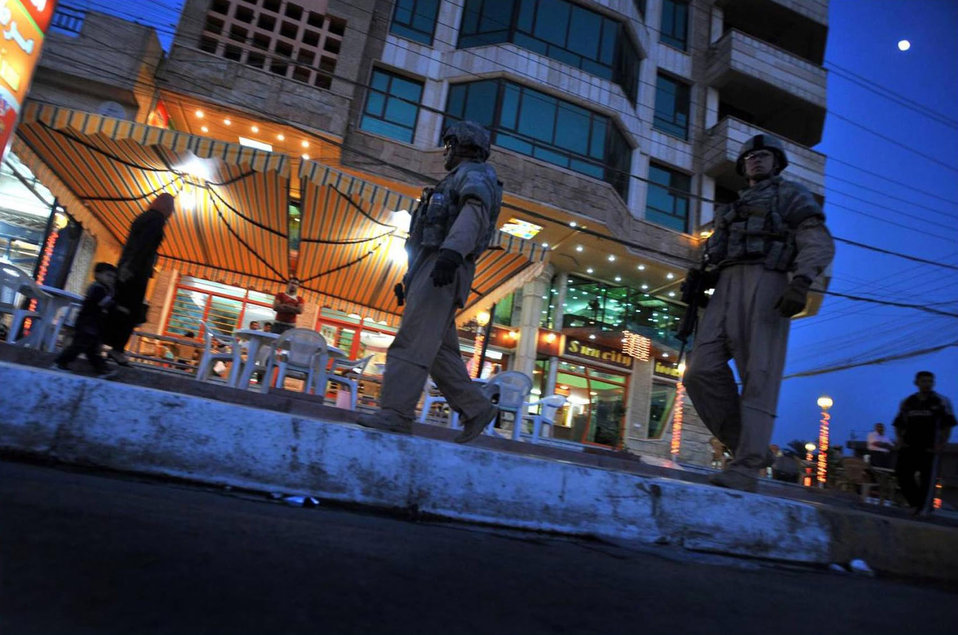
On patrol in Baghdad

Airmen and Soldiers accompany Iraqi police officers on a walking patrol down Spruce Street to hand out flags, leaflets and hanging signs Nov. 8 in the Saydiyah community of southern Baghdad, Iraq. The Airmen are assigned to the 732nd Expeditionary Security Forces Squadron Det. 3 and attached to the Army's 716th Military Police Battalion, 18th MP Brigade. The Soldiers are assigned to the 1st Brigade Combat Team, 4th Infantry Division.